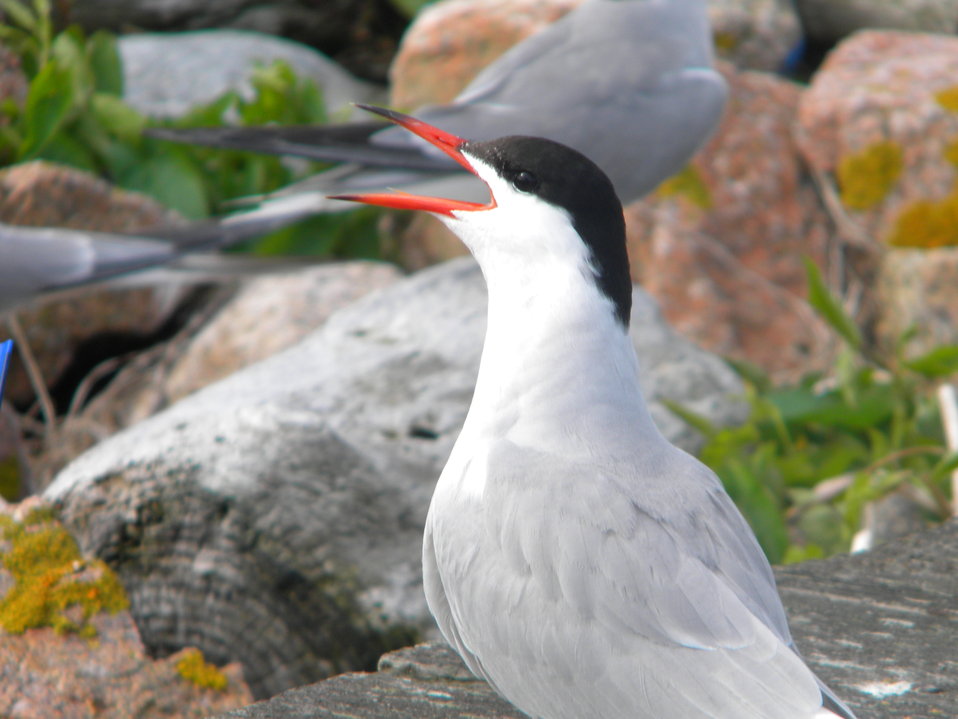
Common tern on Petit Manan Island, Maine Coastal Islands National Wildlife Refuge, Me.